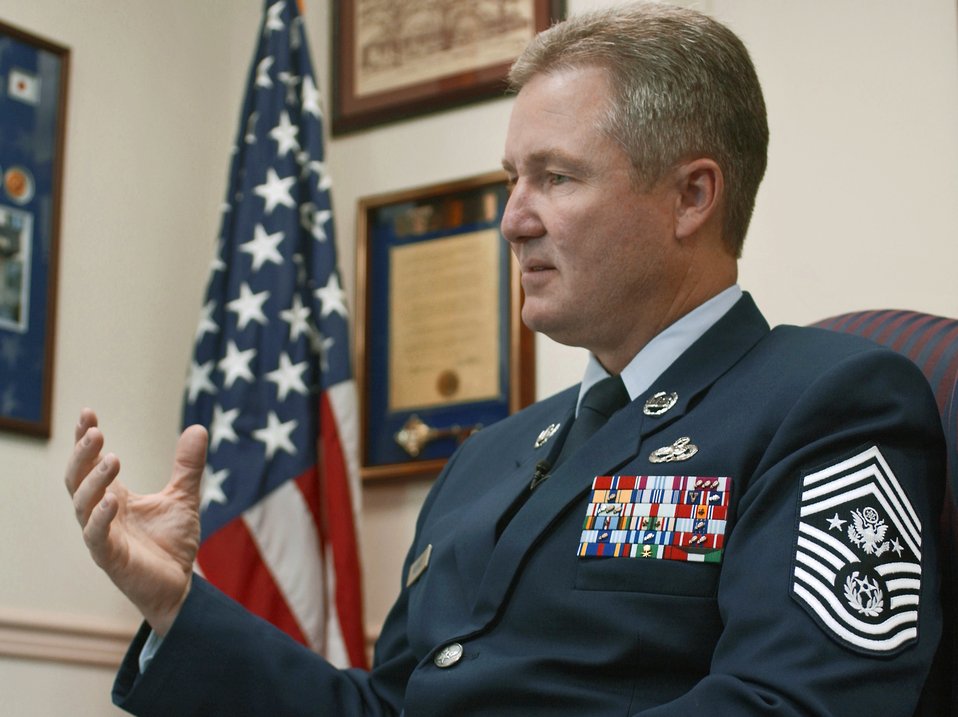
CMSAF New stripes

WASHINGTON -- Chief Master Sgt. of the Air Force Gerald R. Murray explains the significance of his new stripes during an interview in his Pentagon office Oct. 21. His new insignia becomes official Nov. 1.